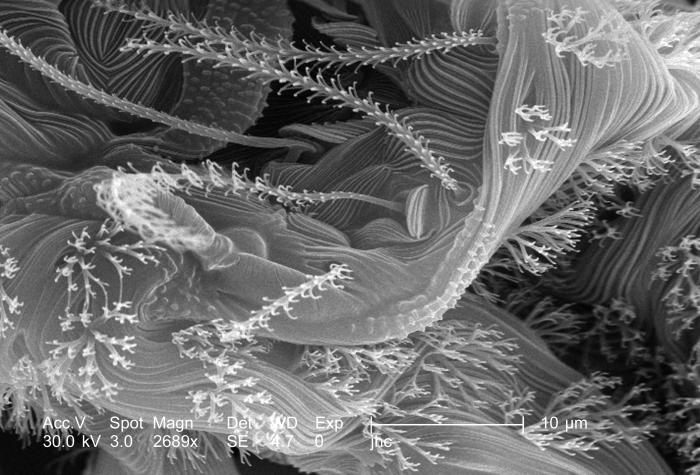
Under a high magnification of 2689x, this scanning electron micrograph (SEM) revealed the highly ornate ultrastructural morphology associated with the exoskeletal surface of a mite found on the skin of a deceased lizard, on the grounds of the Decatur, Georgia suburbs. As a member of the specie Nanorchestes sp., Family Nanorchestidae, this is a free-living, fungivorous soil and leaf-litter/moss mite that was simply an incidental finding on the exterior of this lizard. It is not a lizard associate per se and certainly not parasitic.